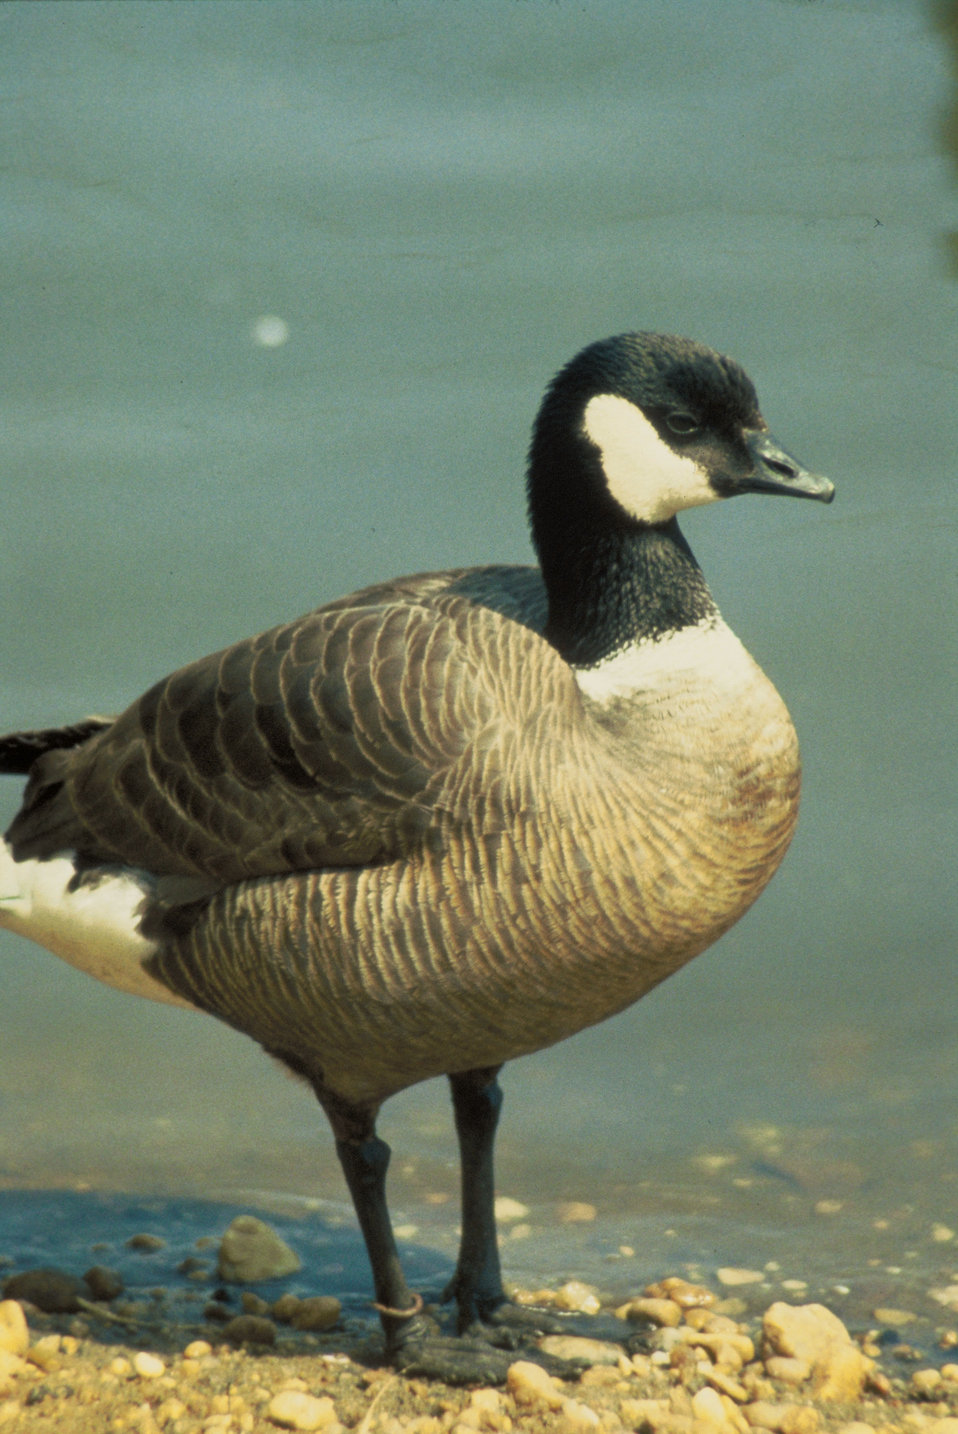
Goose Aleutian

Aleutian goose.